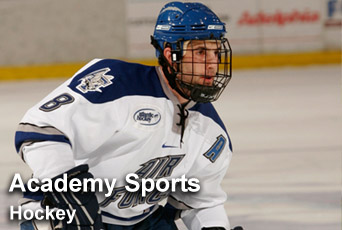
Academy sports: Hockey

For up-to-date scores on all U.S. Air Force Academy sports, visit their Web site at www.goairforcefalcons.com.